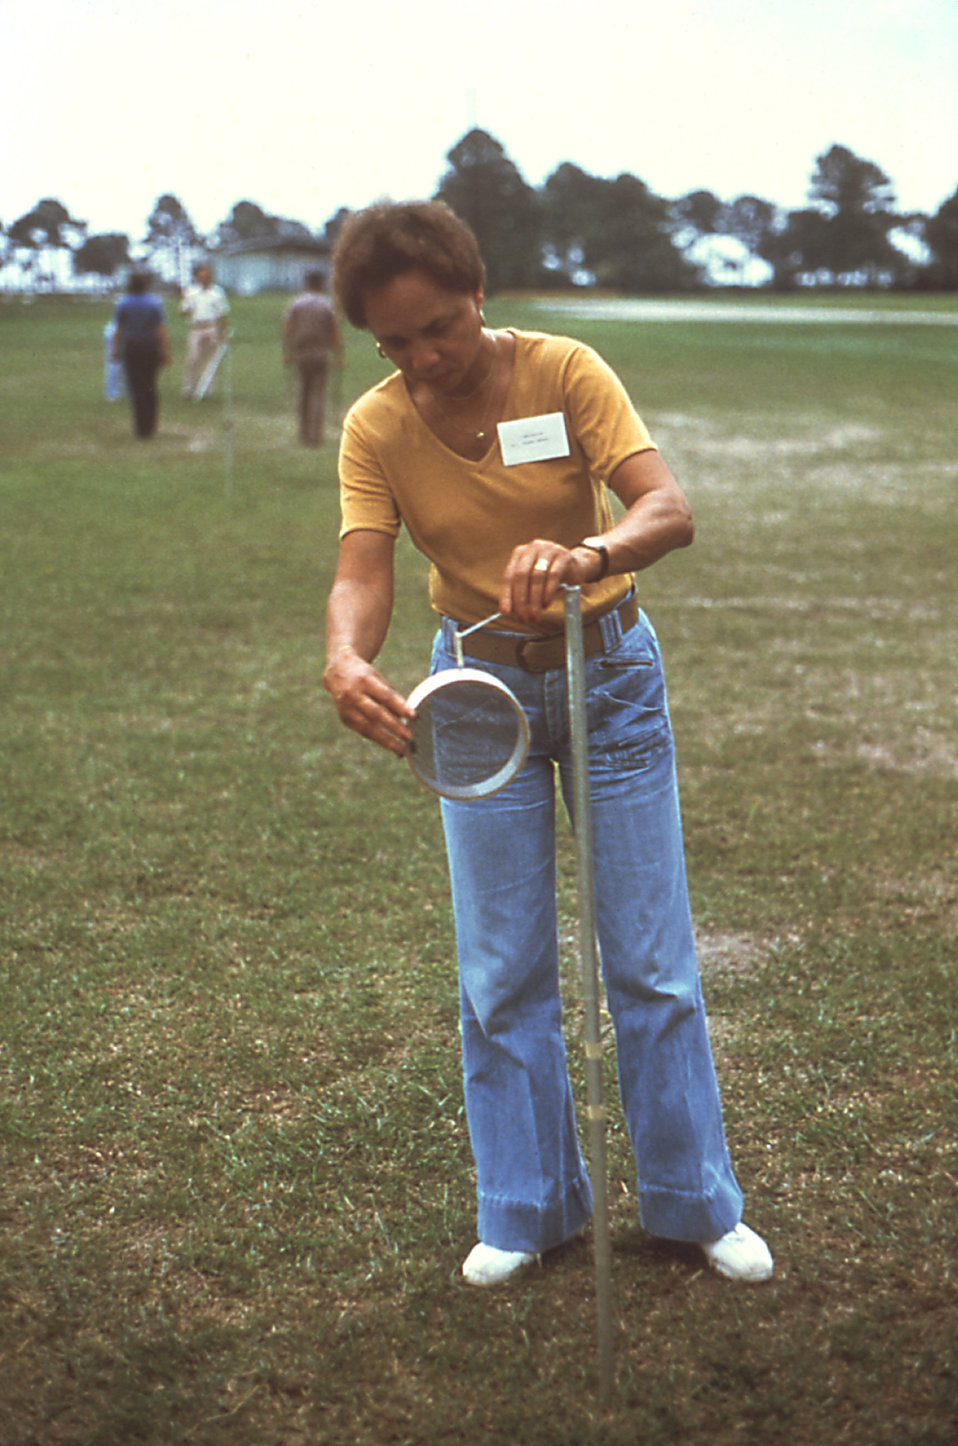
This 1981 photograph depicts an arboviral researcher as she attaches a bioassay collection cage constructed of PVC material, atop a metal stake inside the parameters of a field research study.